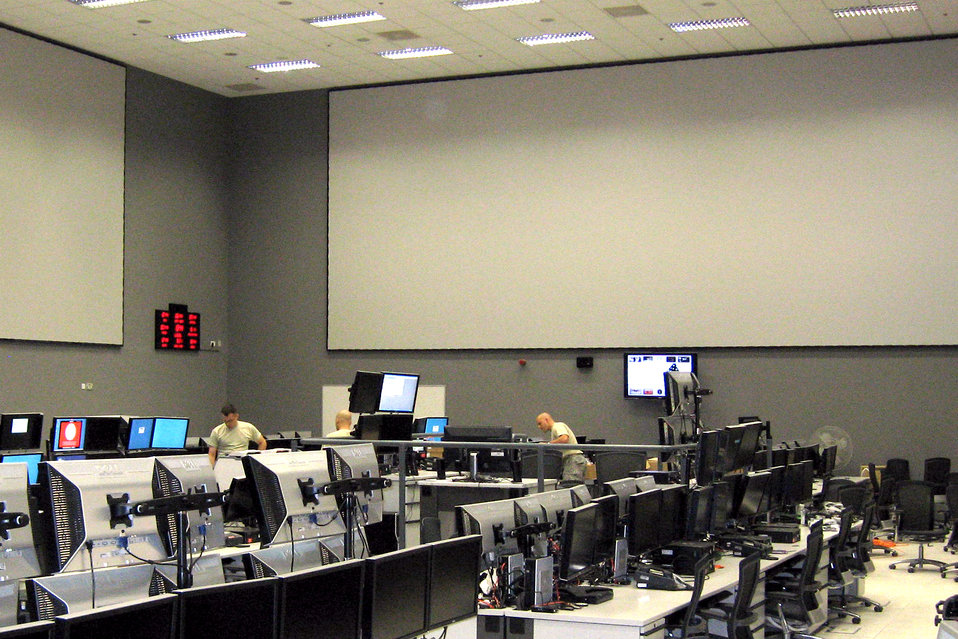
ESC team efforts bring new combined air, space operations center to life

Airmen put finishing touches on the installation of equipment at the brand new, state-of-the-art combined air and space operations center in Southwest Asia. A team from the Electronic Systems Center, headquartered at Hanscom Air Force Base, Mass., led the effort to equip, modernize and streamline operations in the new center.